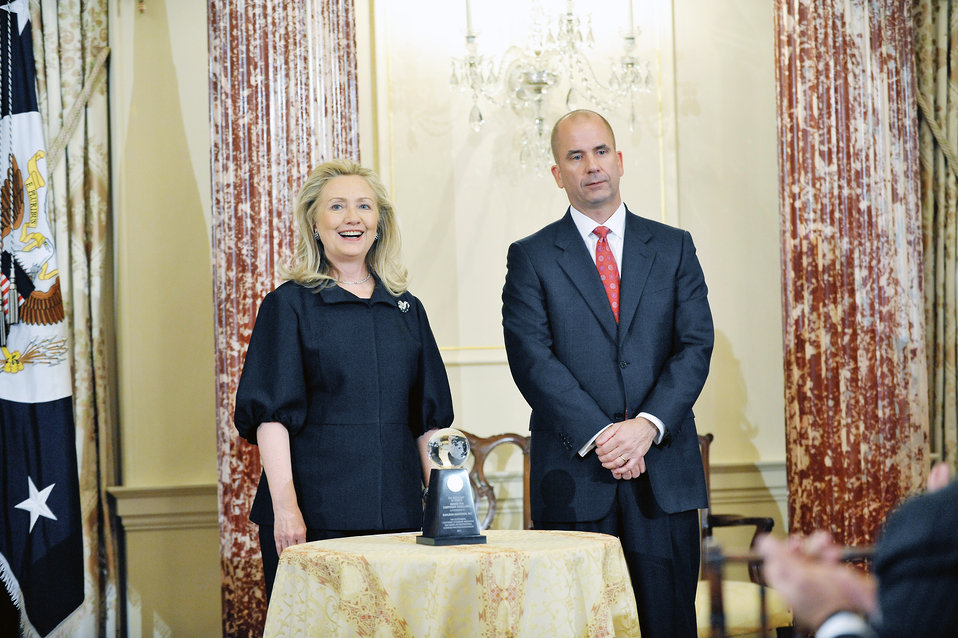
Secretary Clinton Presents the Awards for Corporate Excellence

U.S. Secretary of State Hillary Rodham Clinton presents the Awards for Corporate Excellence (ACE) to Sahlman Seafoods, Incorporated, in Nicaragua; Procter and Gamble in Nigeria; and Procter and Gamble in Pakistan, at the U.S. Department of State in Washington, D.C., on January 18, 2012.